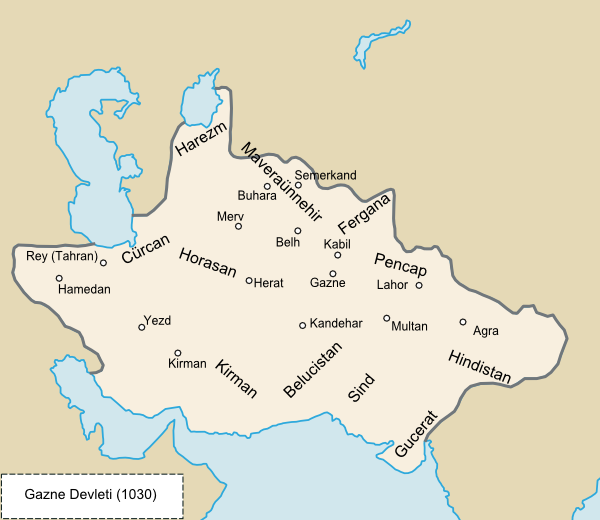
Türkçe: 1030 yılı Gazne Devleti haritası Ghaznavid Empire in 1030